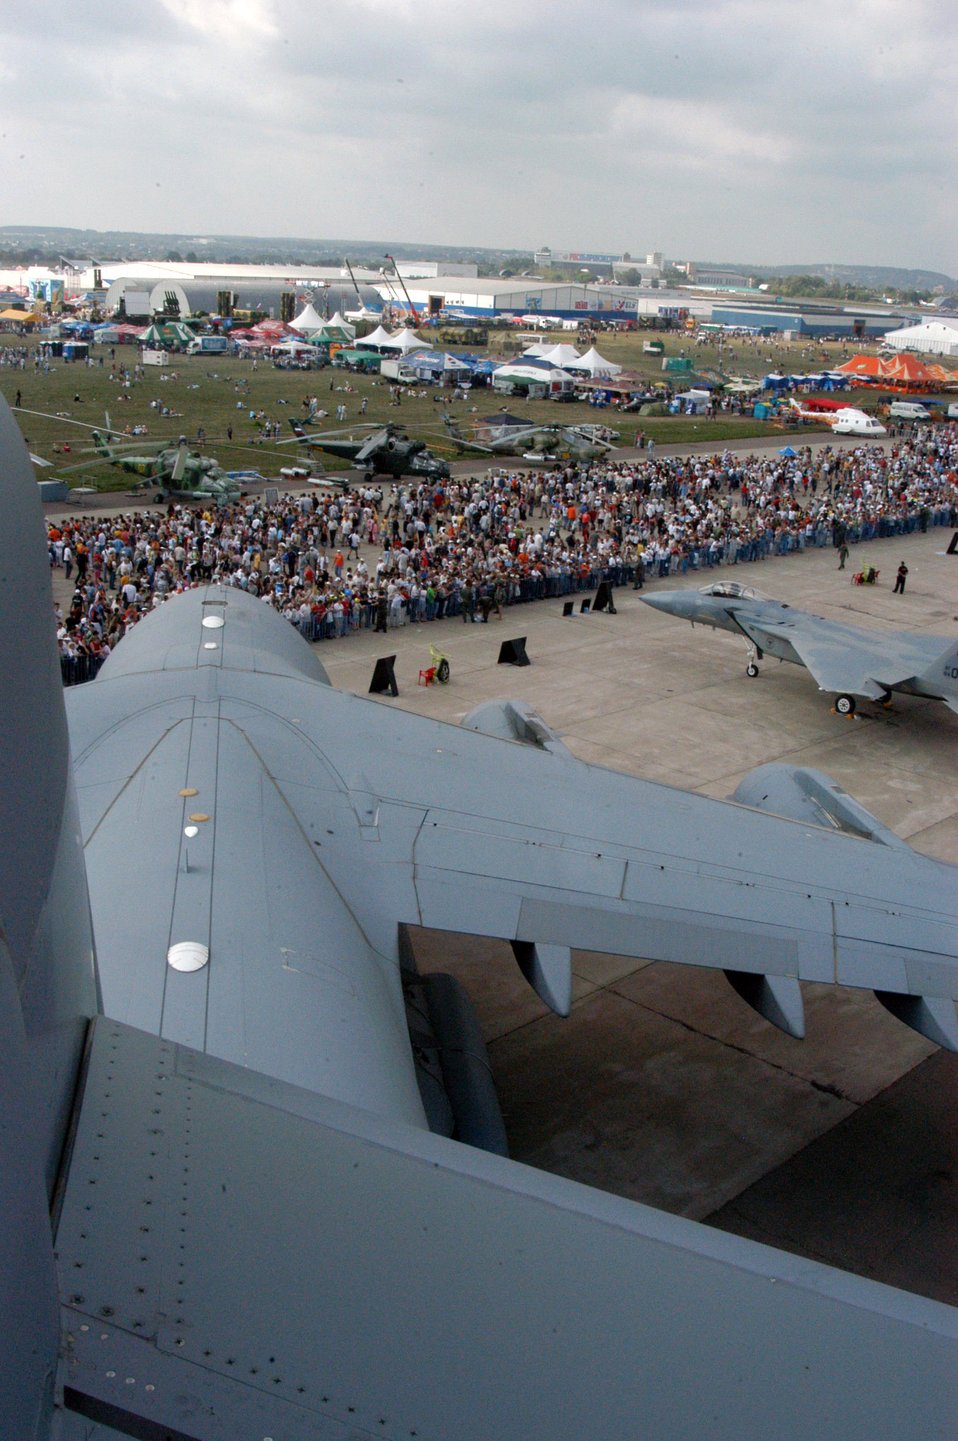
Airmen in Moscow reach out to children

A view from the tail of the C-17 Globemaster III shows just some of the thousands of people who visited the Moscow International Air Show Aug. 26 in Zhukovsky, Russia. A KC-135 Stratotanker from Royal Air Force Mildenhall, England; an F-15 Eagle from RAF Lakenheath, England; a B-52 from Barksdale Air Force Base, La.; a C-17 Globemaster II from McChord AFB, Wash., and two F-16 Fighting Falcons from Spangdahlem Air Base, Germany, were on static display at the air show, along with many other aircraft from all over the world. The air show began Aug. 21 and concluded Aug. 26, and had more than 500,000 visitors.